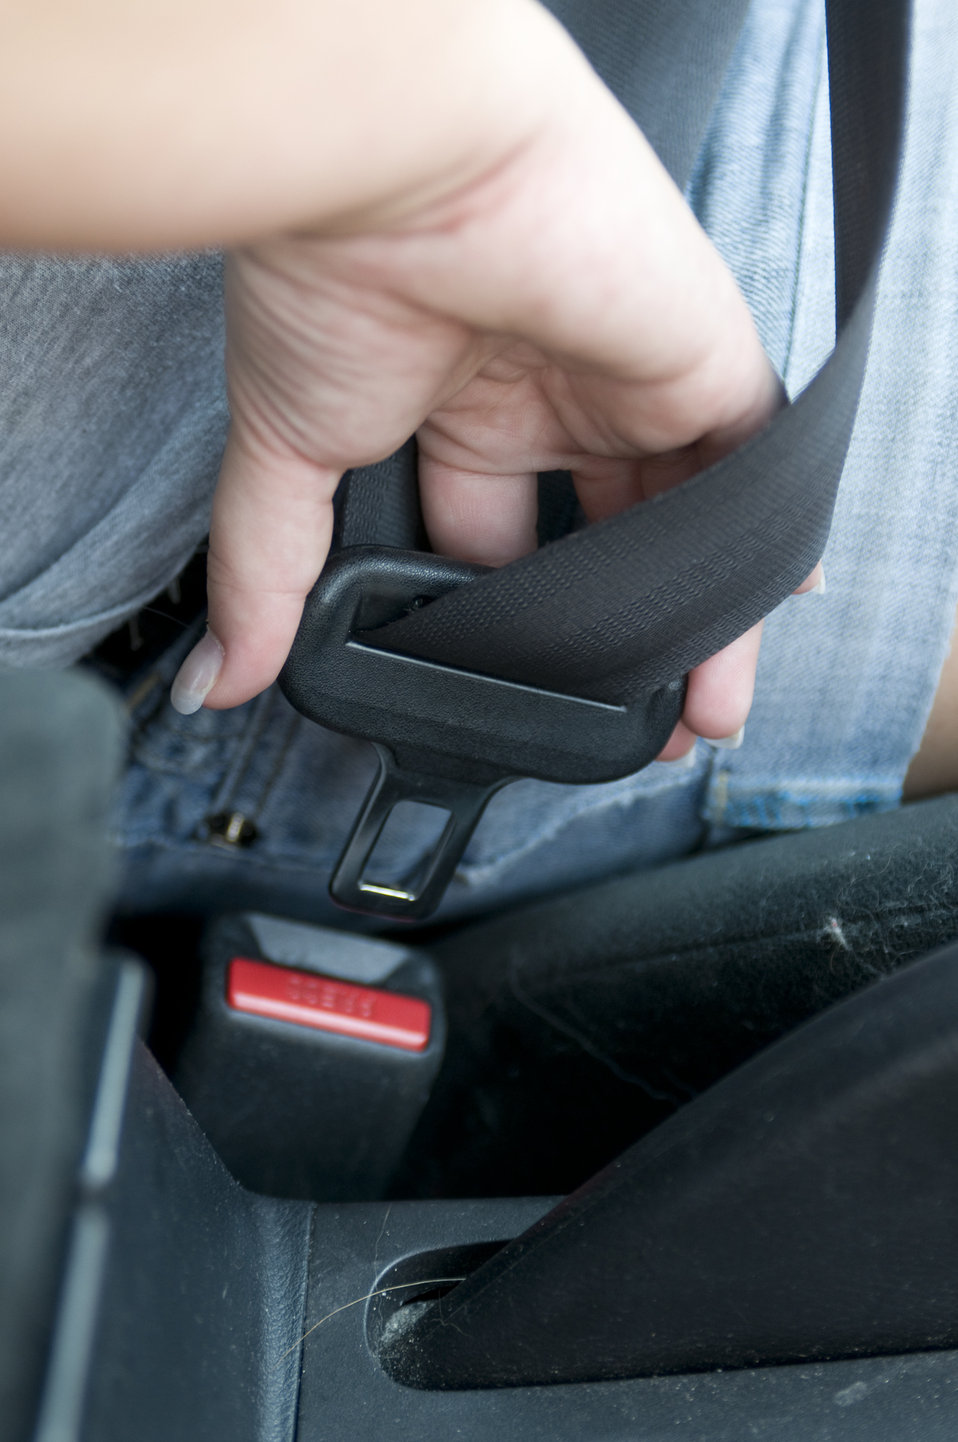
Here we see the right hand of a teenage motor vehicle operator, seated in the driver's seat, and securing her seat belt latch before embarking on a drive.